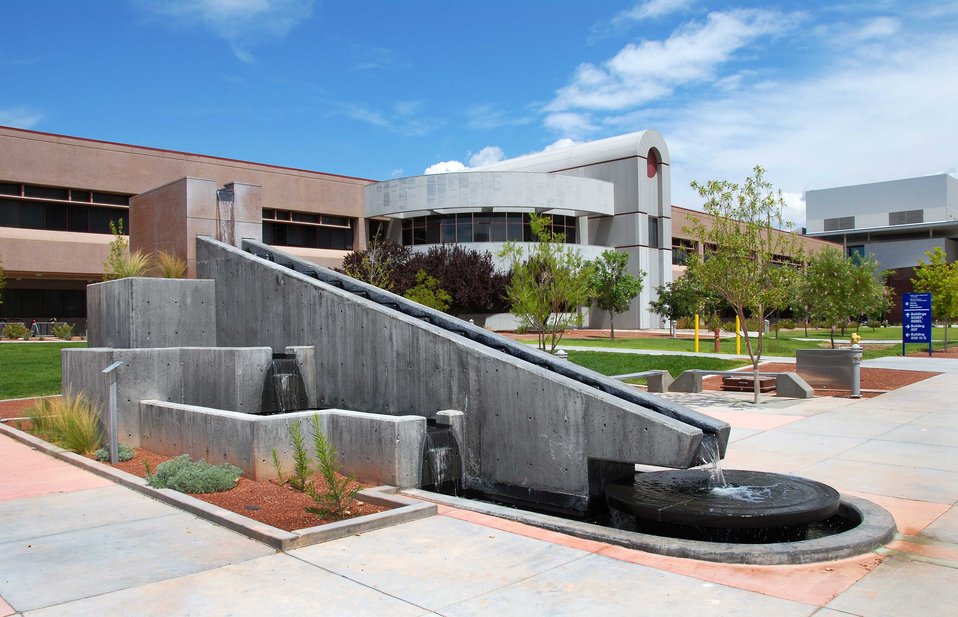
At Sandia, the Microsystems and Engineering Sciences Applications (MESA) complex's initial mission is to produce electronic circuits and computer chips designed to withstand high levels of radiation.
These hardened electronics are critical to national security needs. Beyond its security role, MESA's combination of high-performance computing simulations, scientific research, and production capabilities in electronics and optics at the micro and nano levels makes it a world leader in a new type of simulation-led engineering that improves the quality of consumer goods.